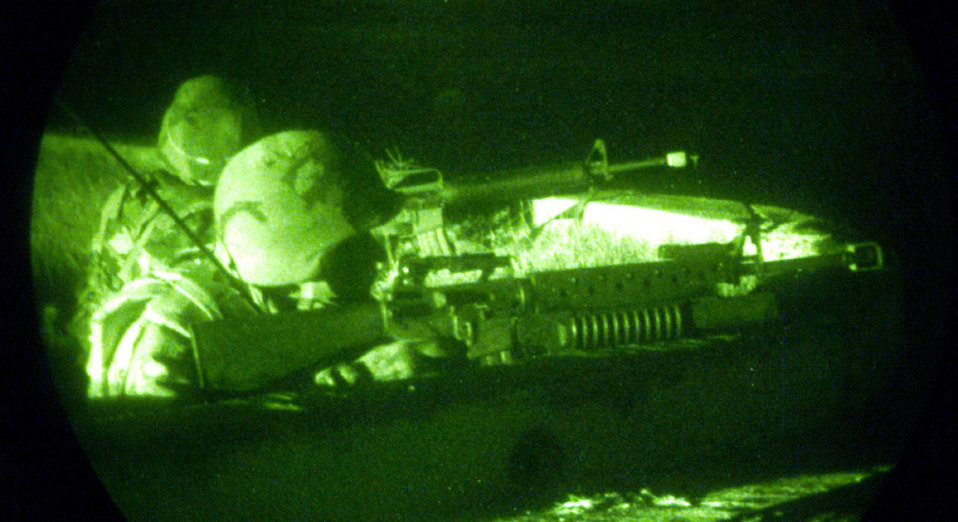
Defensive positions

KUNSAN AIR BASE, South Korea -- Members of the 8th Security Police Squadron, watch and defend against agressors trying to overtake their defensive fighting position at here during Foal Eagle. Foal Eagle 2000 is the largest Joint and Combined field training drill conducted annually in South Korea running from 25 October to 3 November. About 25,000 U.S. troops will take part in the drill, including active duty, Reserve and National Guard troops from bases in the United States and elsewhere in the Pacific. The exercise demonstrates U.S. and South Korean military cooperation.